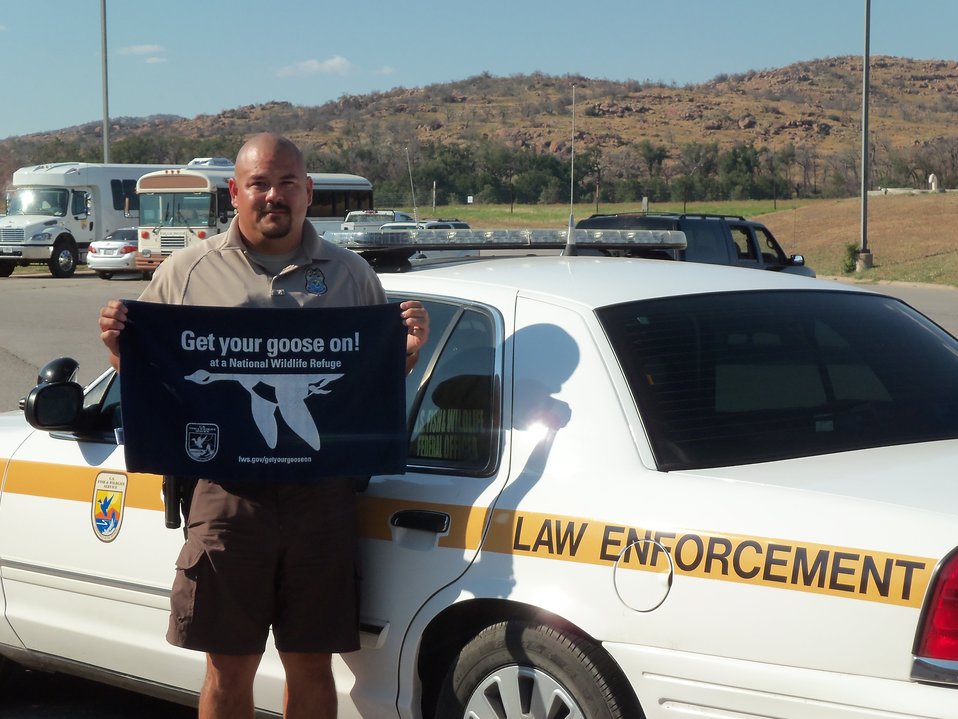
Get Your Goose On!

Wichita Mountains National Wildlife Refuge in Oklahoma.